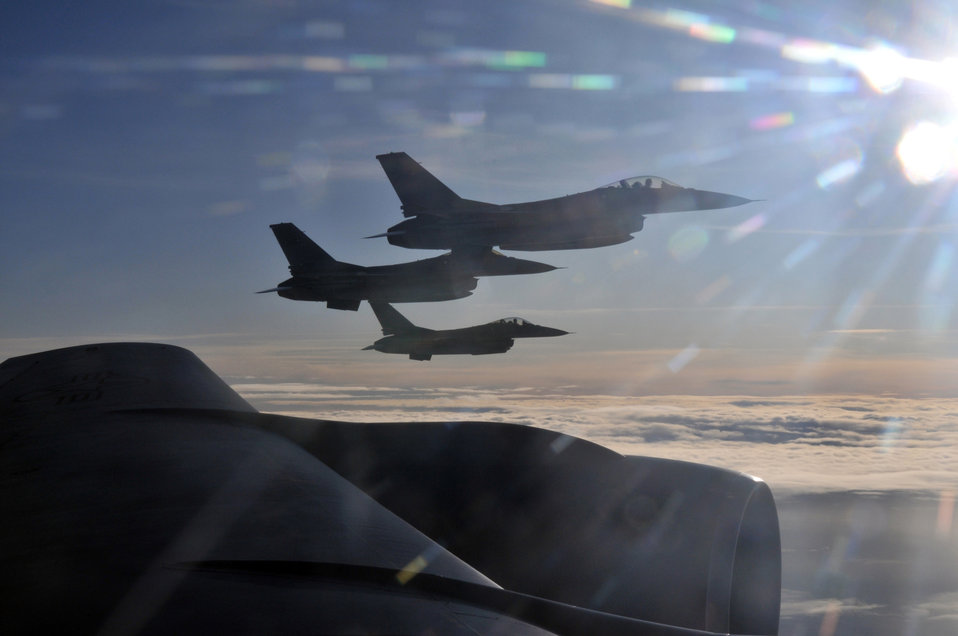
Refueling lifeline of U.S., NATO air ops

Three Royal Danish air force pilots fly F-16 Fighting Falcons off the wing of a KC-135 Stratotanker during a refueling mission over Denmark Dec. 8, 2009. The Royal Air Force Mildenhall-based KC-135 refueled 30 aircraft and pumped more than 40,000 tons of fuel in the mission.